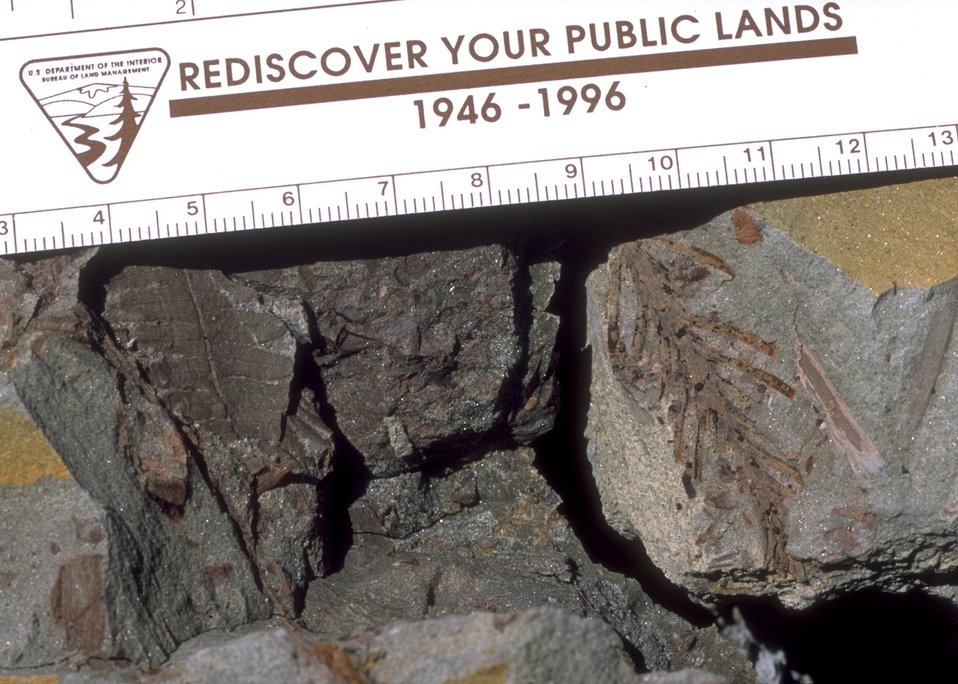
Close up of fossil vegetation, Cedar Ridge Paleo area, Worland Field Office.